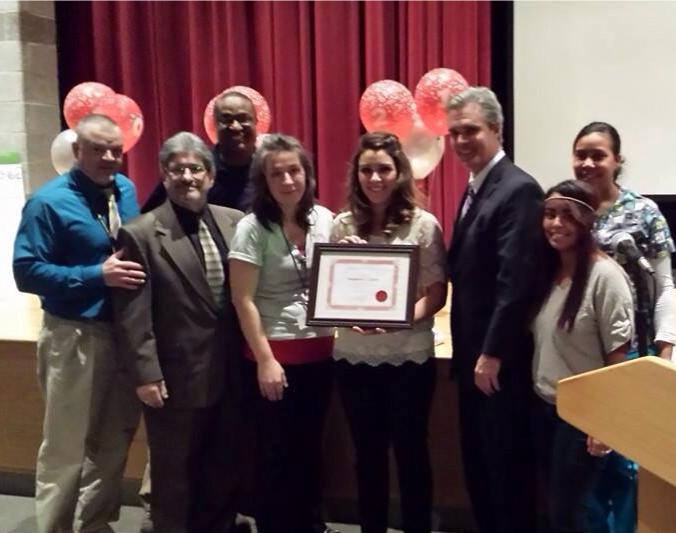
NDFW Event in MA

Fitchburg Community Action Team (FCAT) held an after school IQ challenge event as part of its participation in National Drug Facts Week. FCAT joins teens across the U.S. in week-long effort to shatter the myths on drugs Fitchburg, MA. — As part of the NDFW celebration, Fitchburg students hosted a presentation, designed by youth, for youth, to increase awareness of drugs and drug abuse.
Students held a special community assembly at Fitchburg High School.